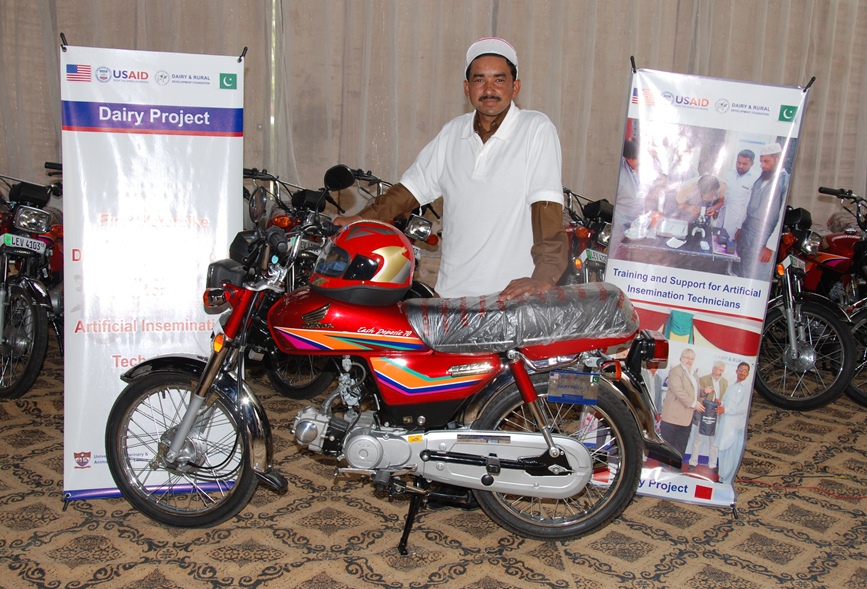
A successfull AI technician with his new motorcycle awarded by USAID Dairy Project5